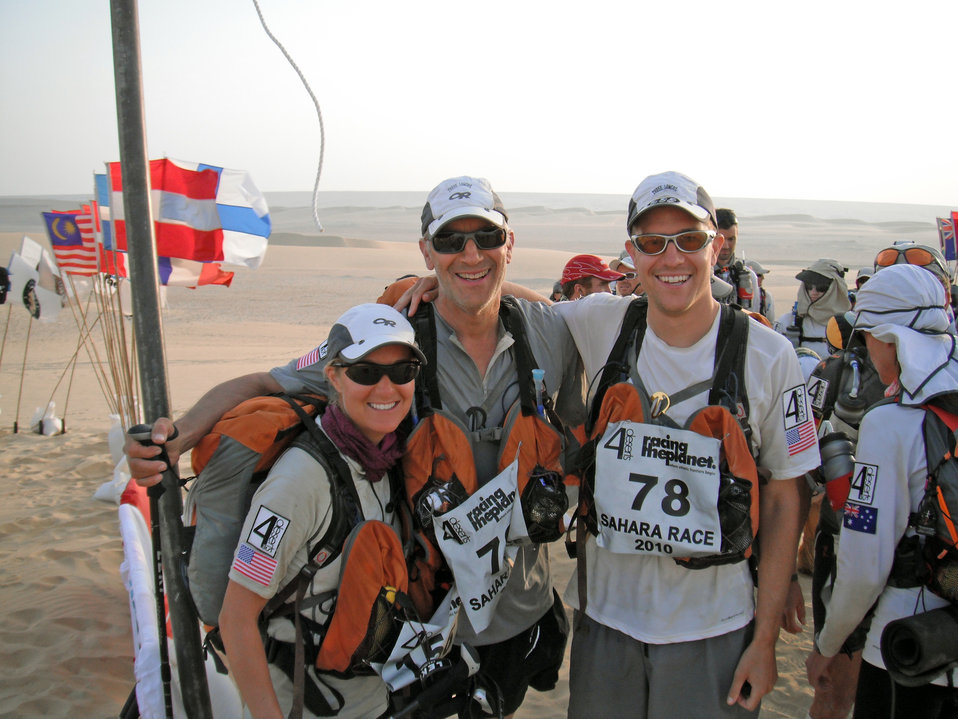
Capt. Zederkof

Capt. Carrie Zederkof, her father, Ted Lowe, and brother, Matt Lowe, competed in the 2010 Sahara Race Oct. 3 through 9, 2010, in Egypt. The Sahara Race is a seven-day, six-stage, 155-mile footrace across the Sahara. Captain Zederkof is a 533rd Training Squadron space-based infrared system mission instructor at Vandenberg Air Force Base, Calif.